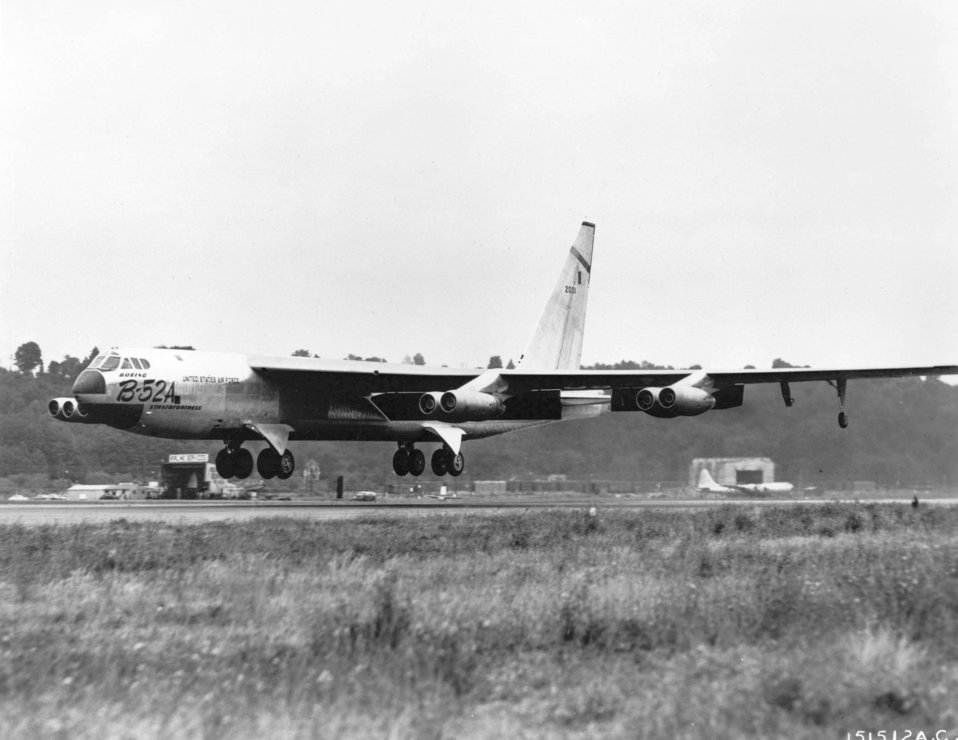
Boeing B-52A

1950's -- August 5, 1954. The Boeing B-52A "Stratofortress," first production model in a new series of long range bombers, is shown taking off from Boeing Field, Wash., on its maiden flight. It is powered by eight Pratt and Whitney Aircraft J-57 turbojet engines, each rated in the 10,000 pound of thrust class. the new bomber has a wing span of 185 feet, length of 156 feet, tail height of 48 feet and gross weight of more than 350,000 pounds.